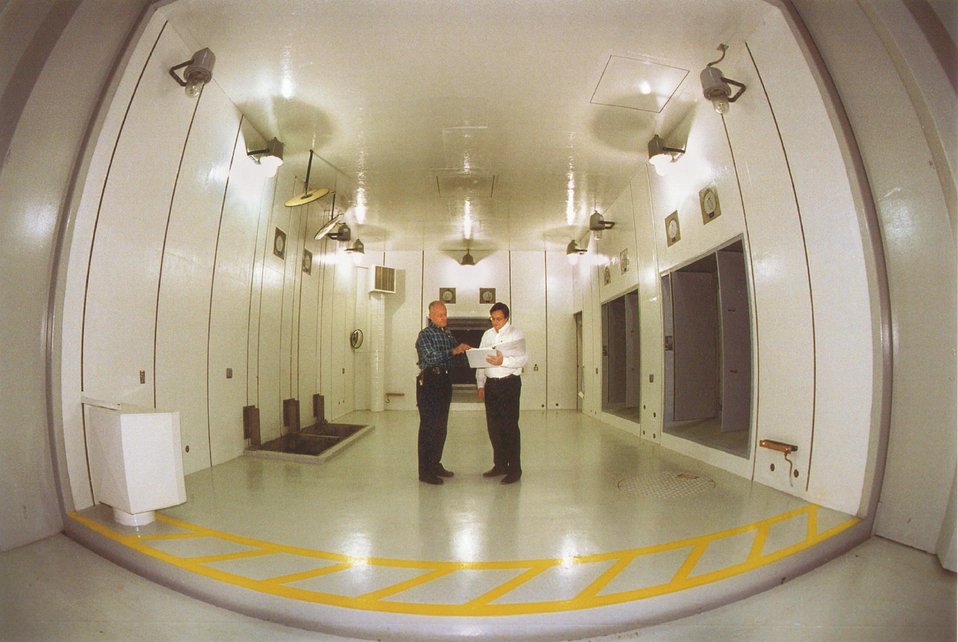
SNL SCIENTISTS REVIEW PROCEDURES INSIDE THE LARGEST OF GIF'S THREE TEST CELLS.

THE GIF FACILITY CAN BE USED FOR MANY APPLICATIONS, INCLUDING SPACE DEVELOPMENT, MILITARY SYSTEMS VULNERABILITY TESTING AND NUCLEAR REACTOR COMPONENT DEVELOPMENT. THE FACILITY CONTAINS THREE LARGE TEST CELLS, SPACIOUS ENOUGH TO IRRADIATE LARGE OBJECTS SUCH AS TANKS AND SATELLITES, AS WELL AS MIRCOCHIPS FOR THEIR ABILITY TO WITHSTAND THE DAMAGING RADIATION ENVIRONMENTS THEY MAY EXPERIENCE IN SPACE, NEAR STORED NUCLEAR MATERIALS, OR DURING A WARTIME NUCLEAR EXCHANGE.